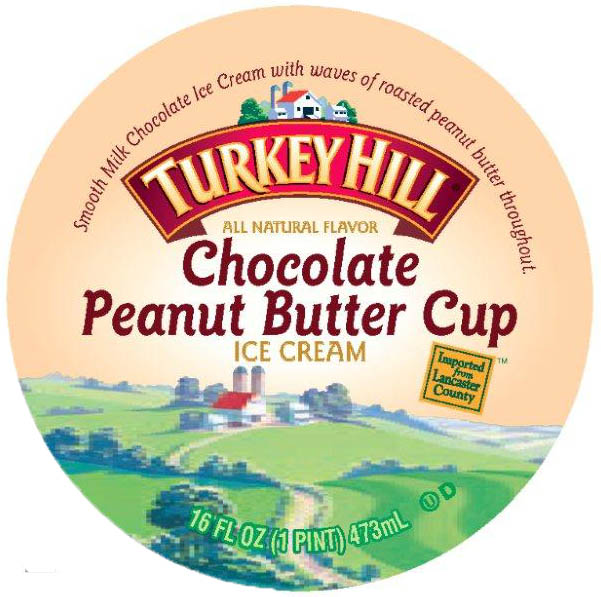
RECALLED – Ice Cream

October 4, 2013 – Product Recall – Turkey Hill Dairy Issues Voluntary Recall of Chocolate Peanut Butter Cup Premium Ice Cream,Fudge Ripple Premium Ice Cream, and Moose Tracks Stuff’d Frozen Dairy Dessert.